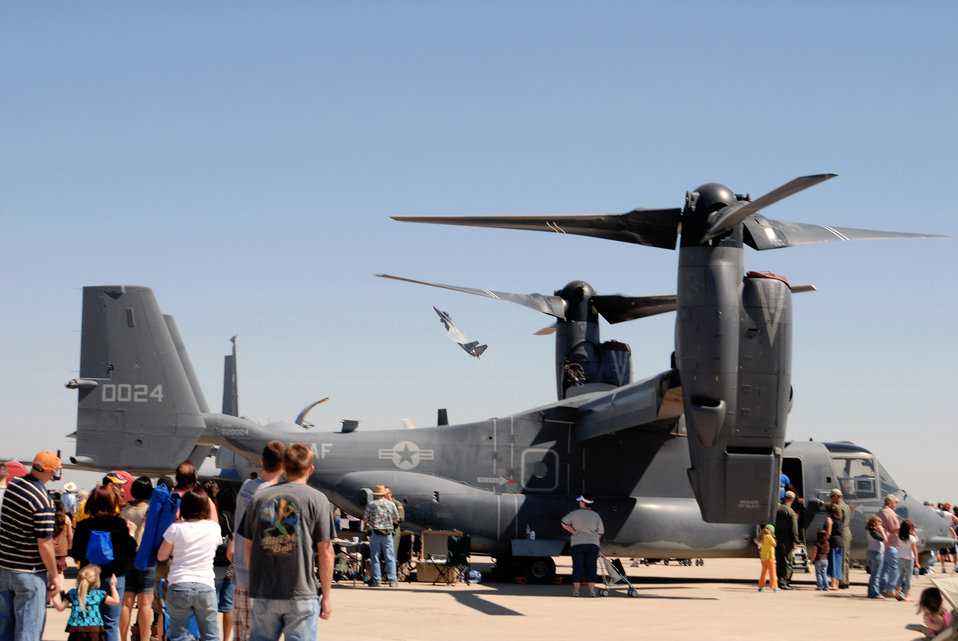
It's a bird, it's a plane

Crowds gather around a CV-22 Osprey as an F-15E Strike Eagle performs aerobatics in the background at Air Fiesta '08 March 15 at Mathis Field in San Angelo, Texas. There were 68 performing and static aircraft at the air show sponsored by Goodfellow Air Force Base and the city of San Angelo.